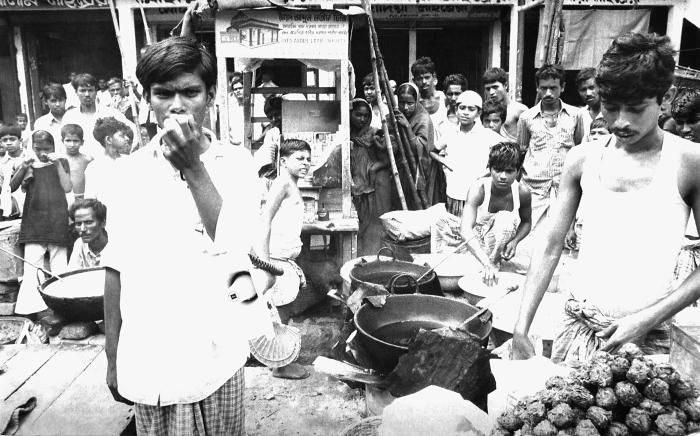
Using a hand-held microphone, this local Bangladesh smallpox eradication team volunteer was photographed as he was announcing the reward that was made available to those who'd report any smallpox cases. Since the marketplace drew such large crowds, it was often a place where capturing the attention of a large group of residents was made easy. If, indeed, a case was reported, from no matter the source, it was investigated fully, and if confirmed as a smallpox case by an epidemiologist, a reward was paid to the informant, no matter the age, and it was subsequently entered into the 'Containment Book'.